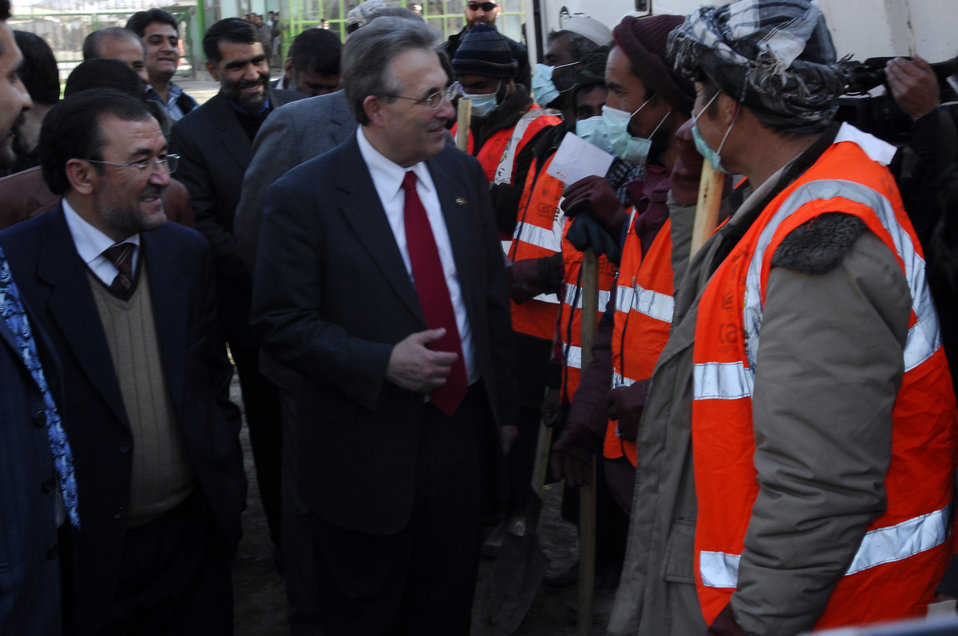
Care92